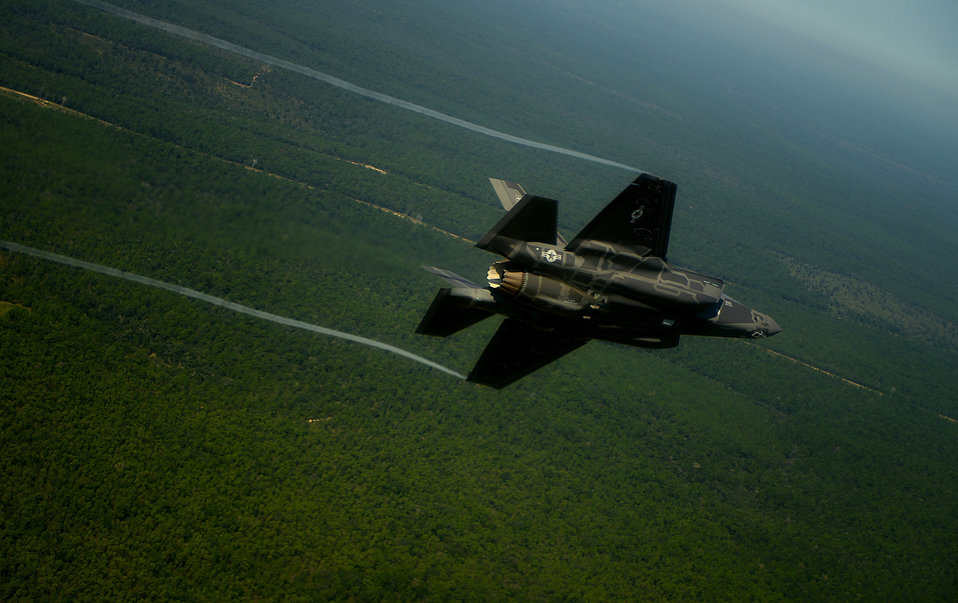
F-35A

An F-35A Lightning II joint strike fighter from the 33rd Fighter Wing at Eglin Air Force Base, Fla., flies over the Emerald Coast Sept. 19, 2012.